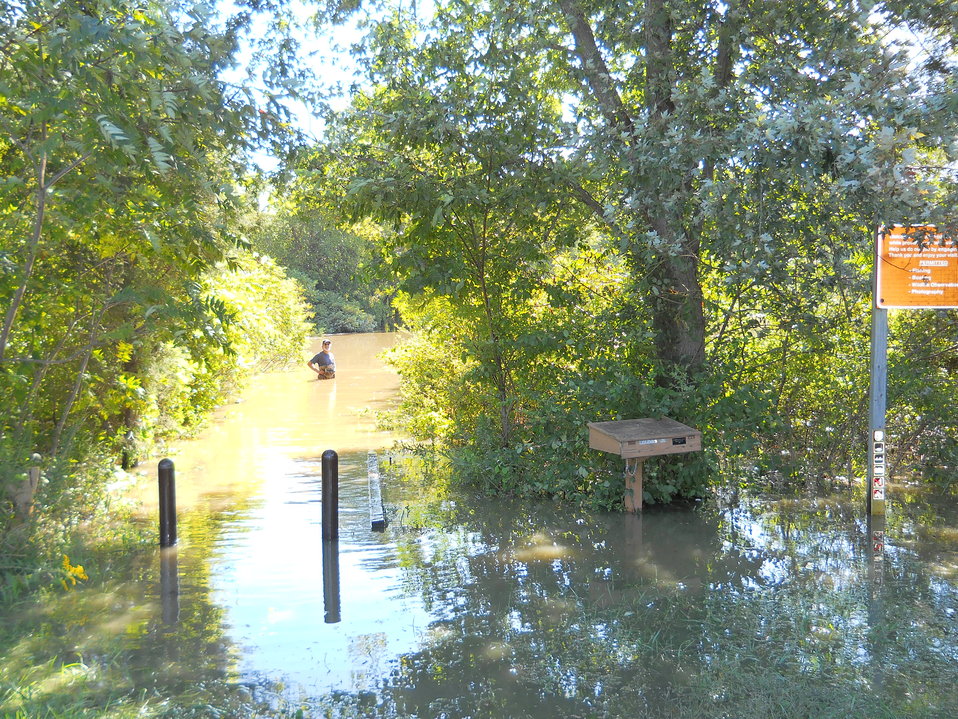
Flooding at Wallkill River National Wildlife Refuge

Bassett's Bridge canoe launch and fishing access. Meagan Racey/USFWS